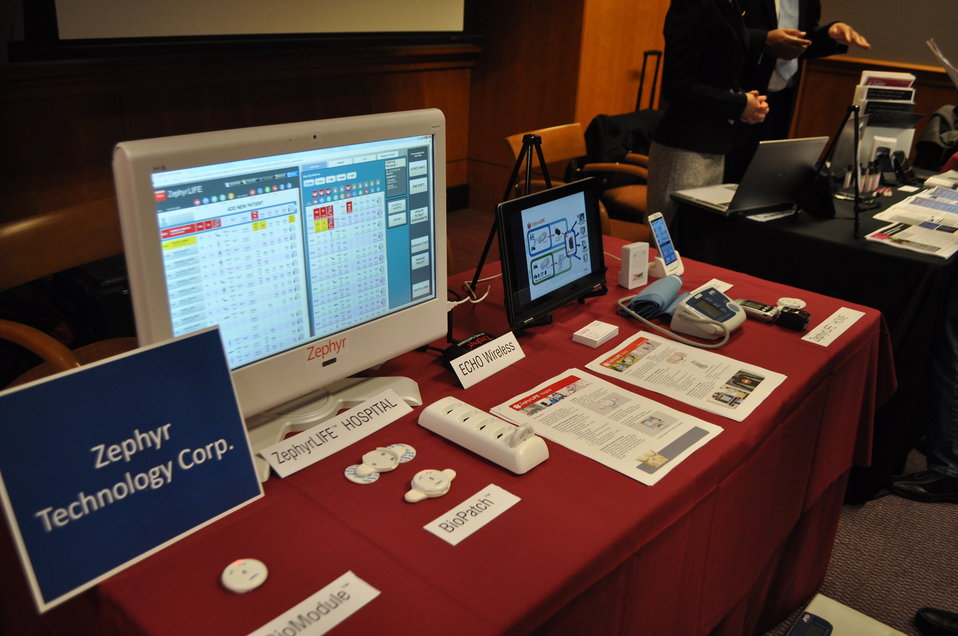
12.6.13 mHealth Innovation Expo

FCC mHealth Innovation Expo.